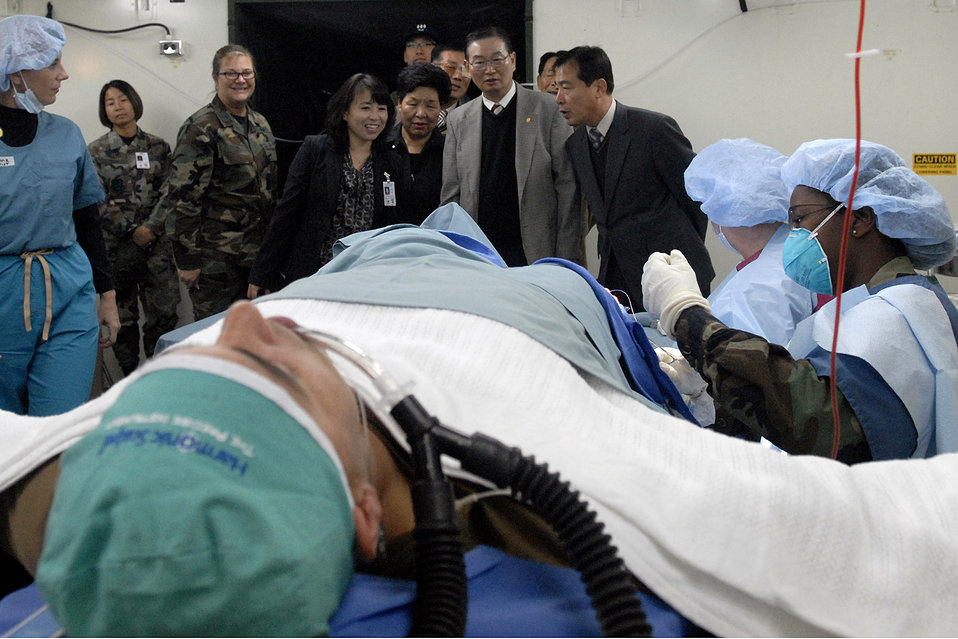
Officials show off expeditionary medical system

Members of the 944th Medical Squadron deployed from Luke Air Force Base, Ariz., set up a simulated operating room during a Korean host visit Oct. 29 at Kunsan Air Base, South Korea. The Air Force Reserve Command's unit mission is to receive training with the expeditionary medical system 25-bed theater hospital.